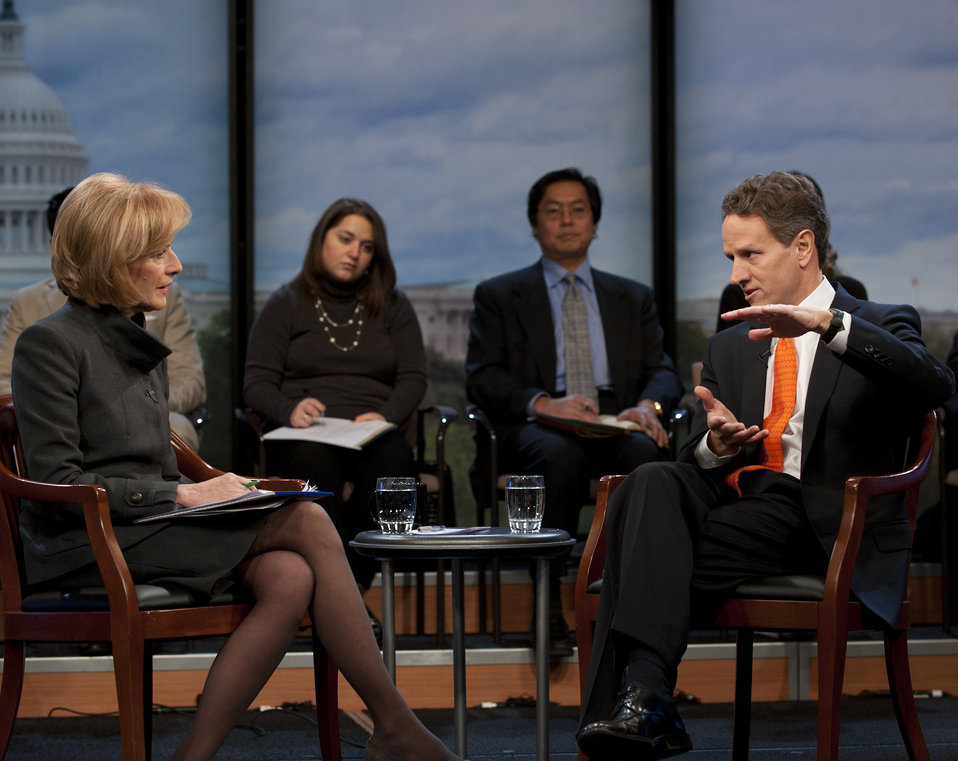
The Atlantic’s “Finding Work, Finding Our Way: Building the Economy and Jobs of the Future” town hall event, 2/9/2011

Judy Woodruff and Secretary Tim Geithner during The Atlantic’s “Finding Work, Finding Our Way: Building the Economy and Jobs of the Future” town hall event on Wednesday, February 9, 2011.